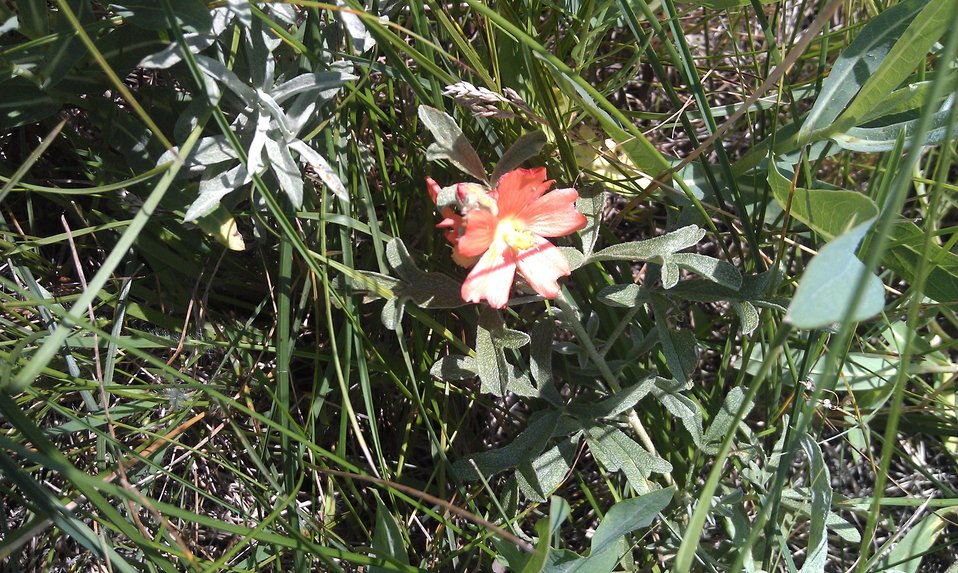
WPA Wildlife

Prairie Flowers